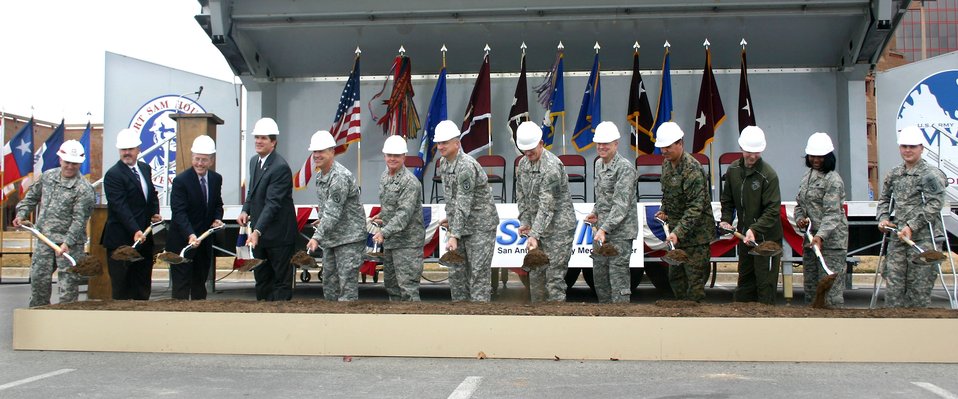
San Antonio Military Medical Center groundbreaking

Air Force and Army military leaders, construction officials and wounded warriors break ground Dec. 8 on the $724 million San Antonio Military Medical Center project that will unify Brooke Army Medical Center, or SAMMC-North, and Wilford Hall Medical Center, or SAMMC-South. The project will expand BAMC, renovate WHMC, boost the San Antonio economy, enhance medical care and consolidate medical education and training for the Air Force, Army, Navy, Marines and Coast Guard.